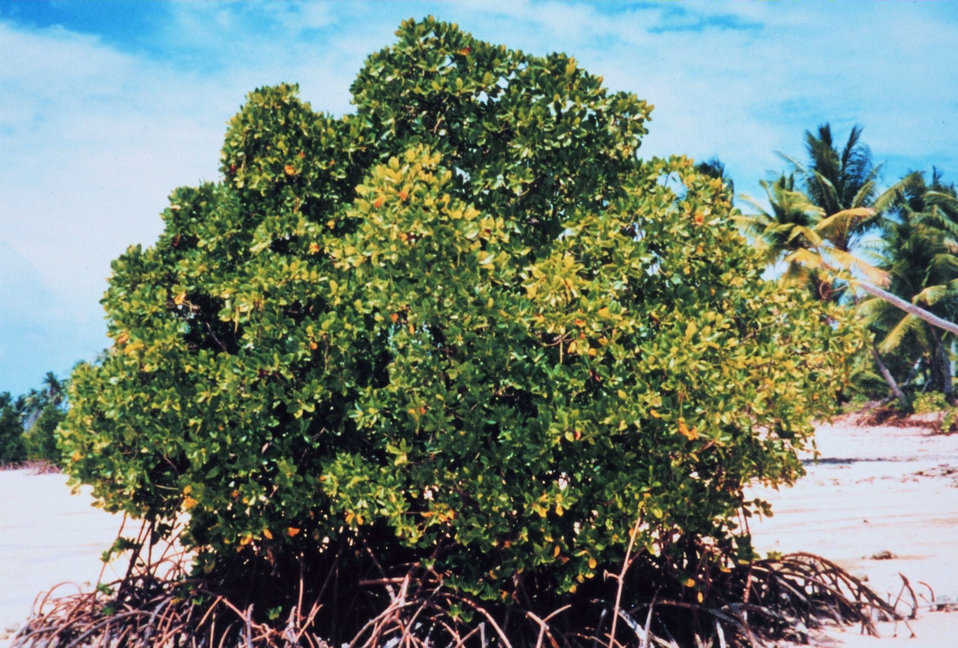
Isolated mangrove on a sandy beach